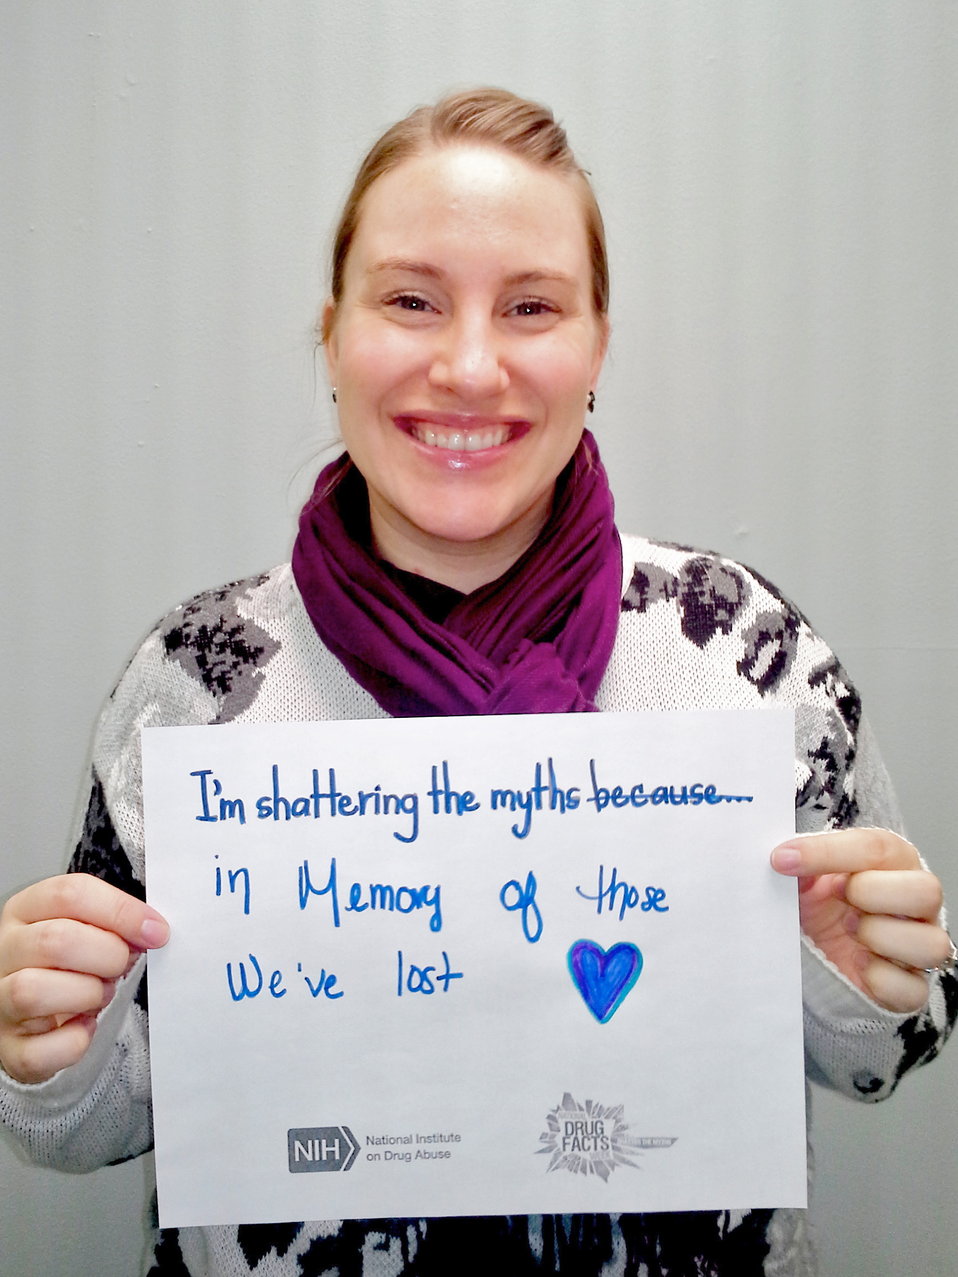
Shattering the Myths campaign in Winona, Minnesota